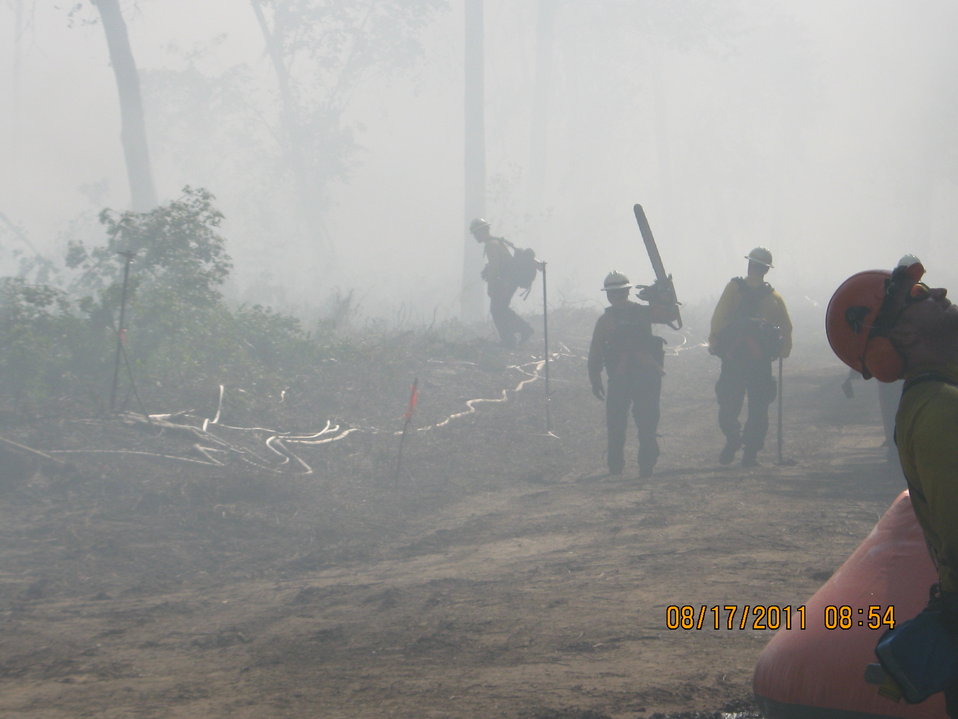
Sawyers in the smoke

Suffolk, VA, August 2011. Firefighters begin their work day on the Lateral West Fire in Great Dismal Swamp.